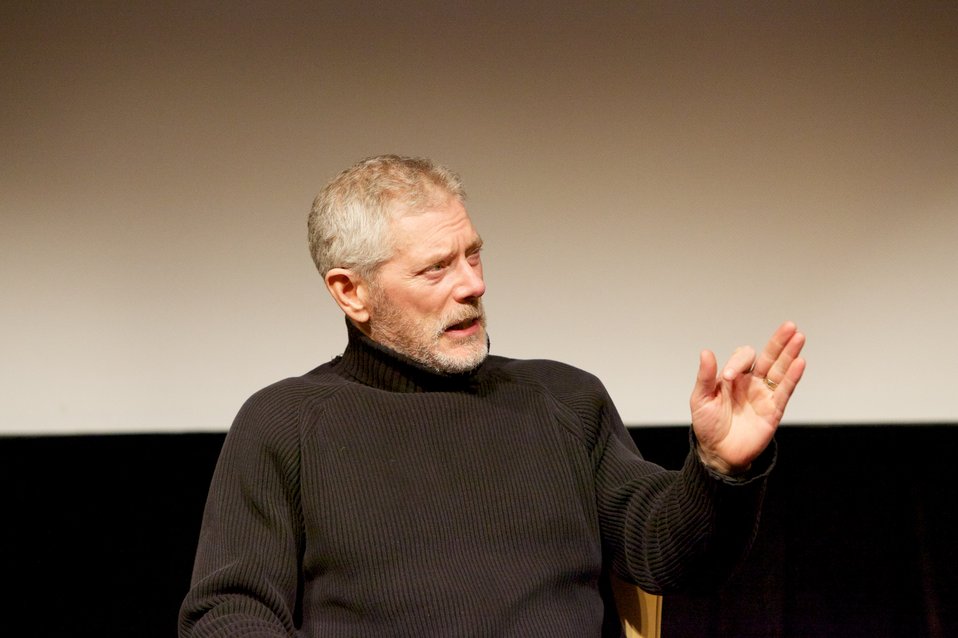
The Gettysburg Story and The Wheatfiled; Stephen Lang, actor and playwright, discusses and answers questions about the films The Wheatfield and The Gettysburg Story